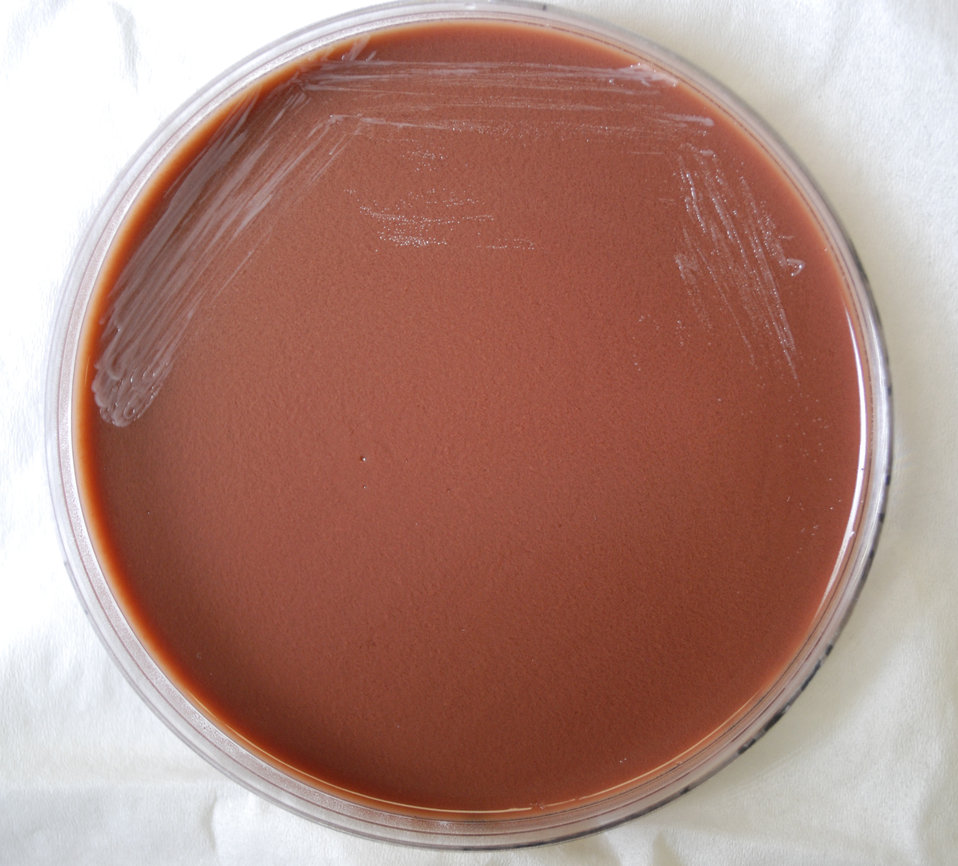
This photograph depicts the colonial morphology displayed by Gram-negative Brucella abortus bacteria, which was grown on a medium of chocolate agar, for a 48 hour time period, at a temperature of 37�C. B. abortus is one of the bacterial species responsible for causing the infectious disease known as brucellosis. For a closer view of these bacterial colonies, see PHIL 12244.